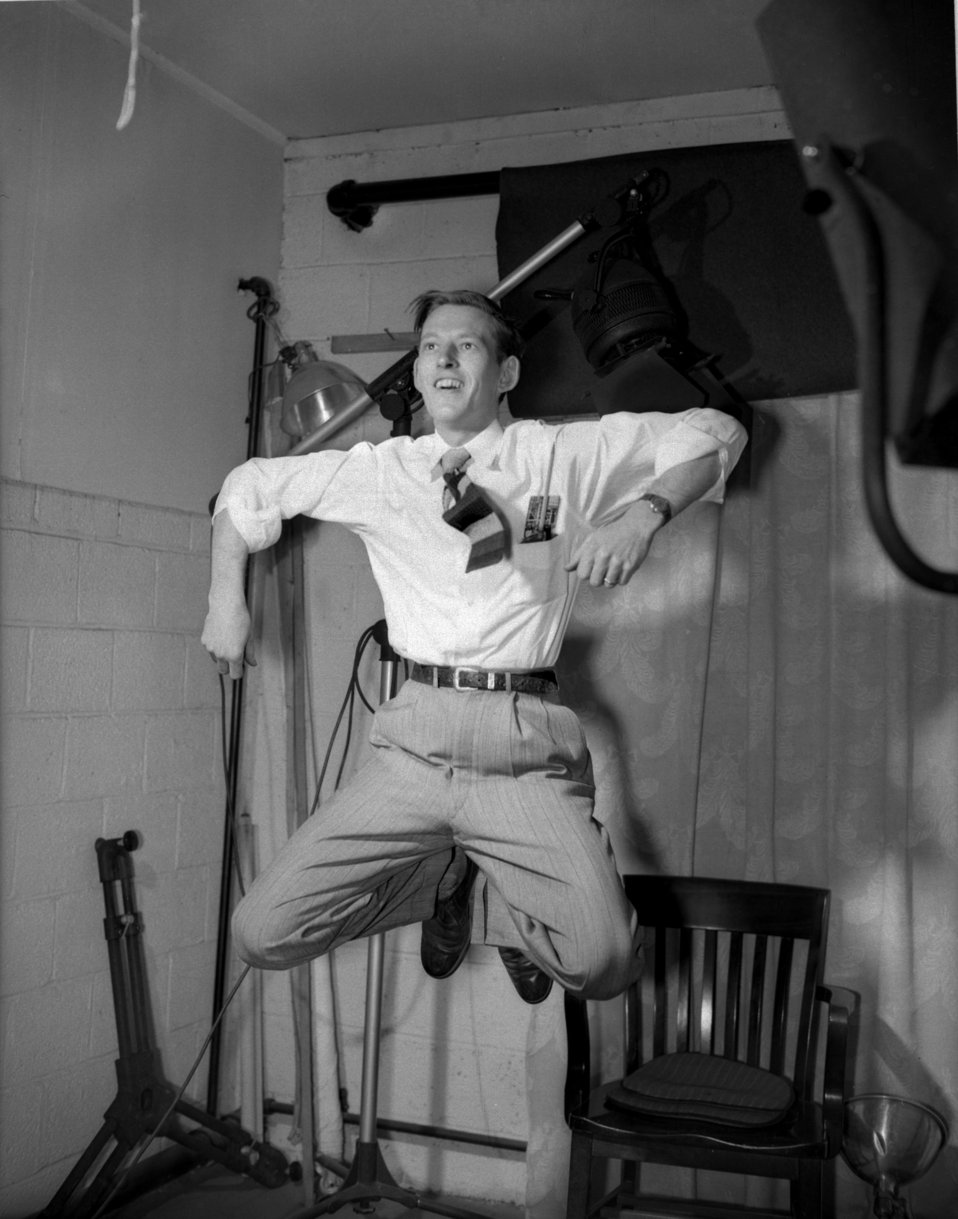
Ed Westcott leaping while testing a strobe in his AEC studio

3357-2 Ed Westcott leaping while testing a strobe in his AEC studio, in Bld. 2714 Oak Ridge Tennessee
3/21/1947